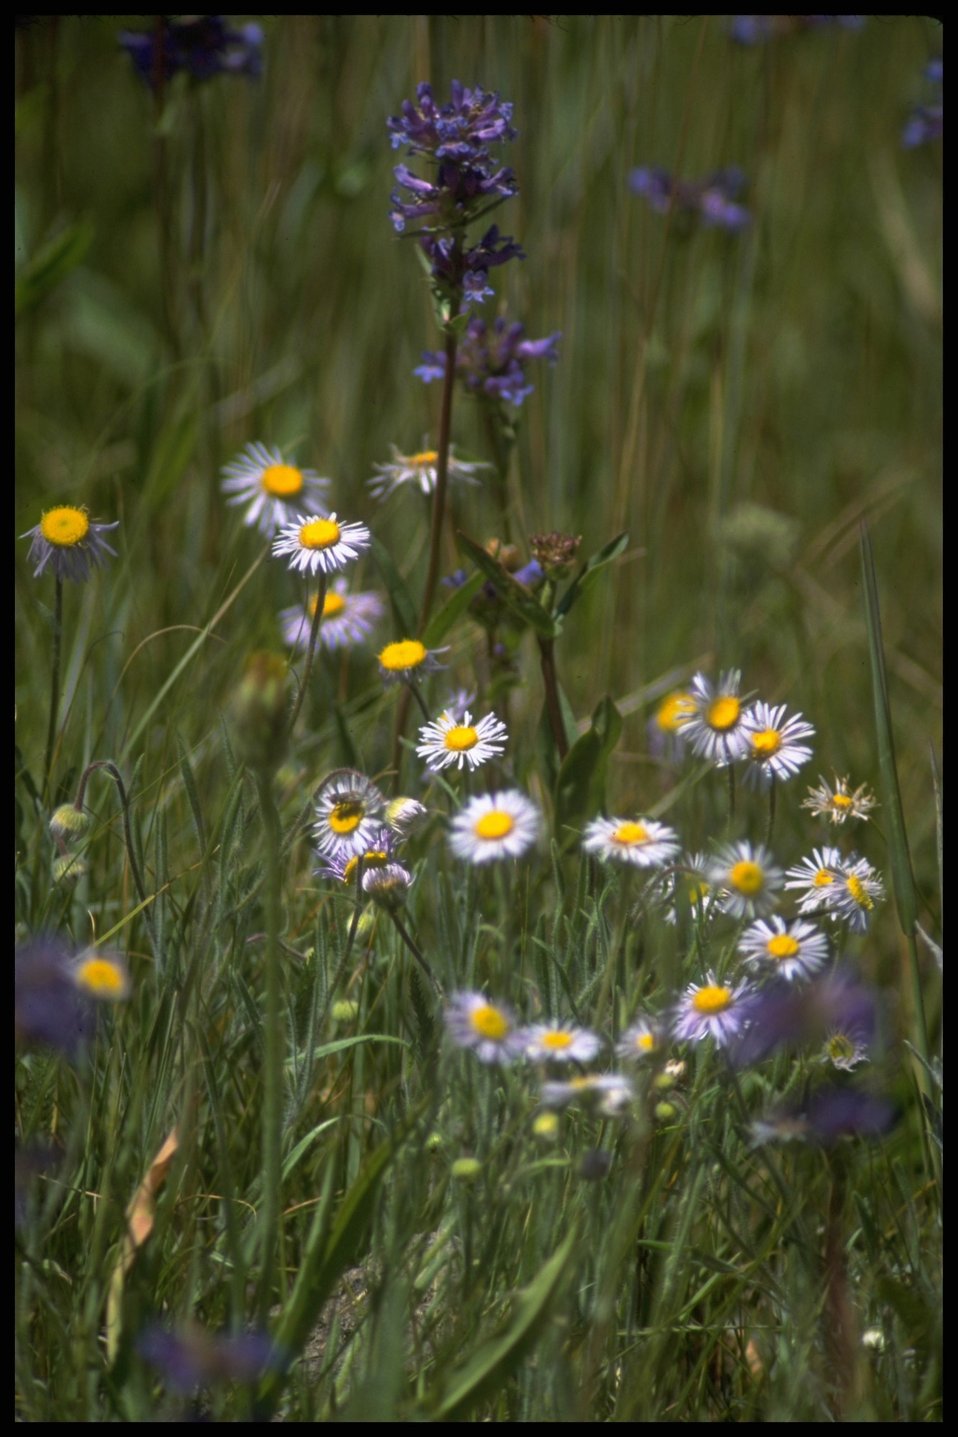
Medium shot of Daisies and Penstemon wildflowers, Lakeview District.